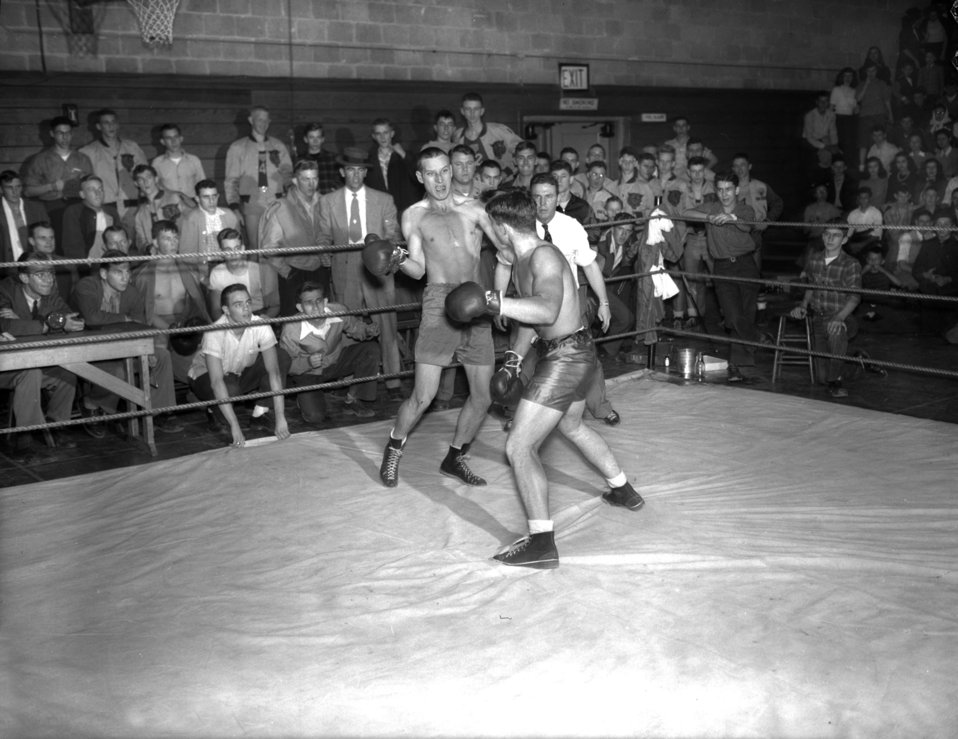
High School Boxing Match

4304-13 DOE photo Ed Westcott

Oak Ridge Tennessee 2-6-1948